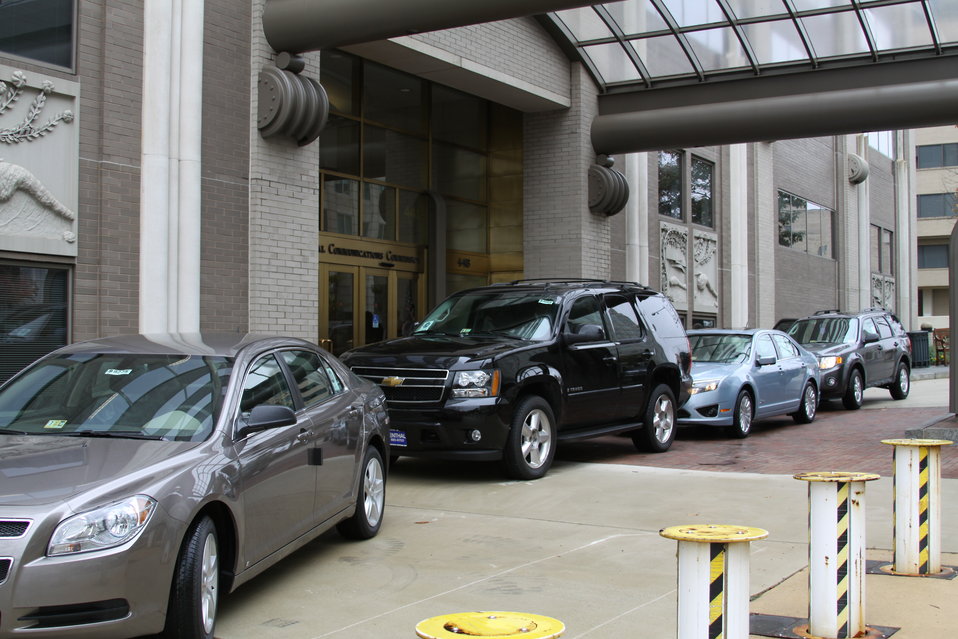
FCC Official Vehicle Tour